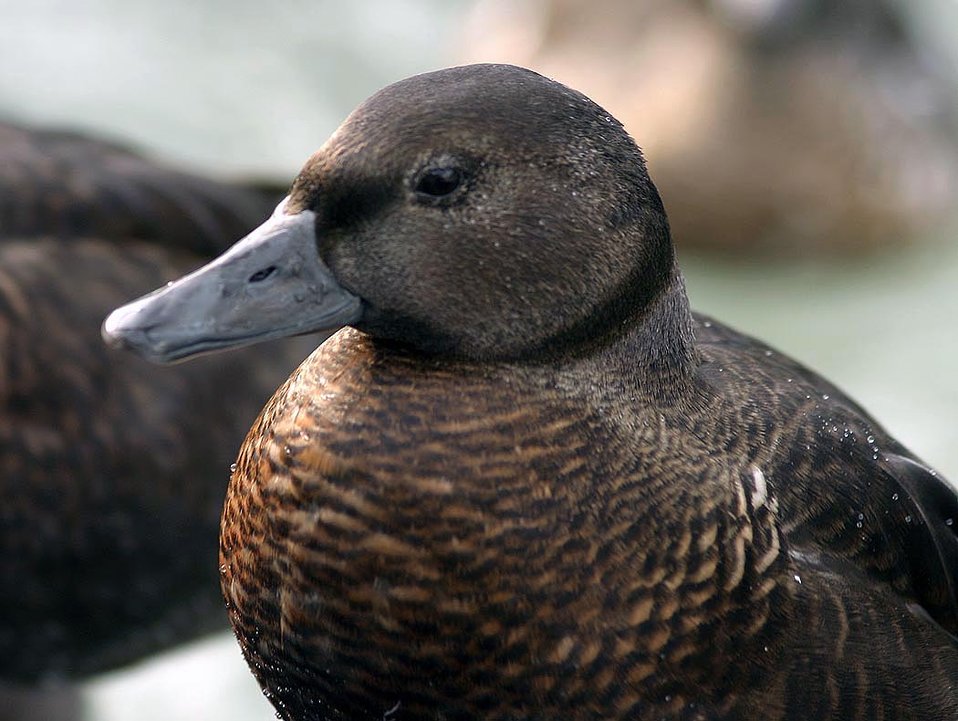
Threatened Steller's eider (Polysticta stelleri) female, Alaska SeaLife Center, Seward, Alaska